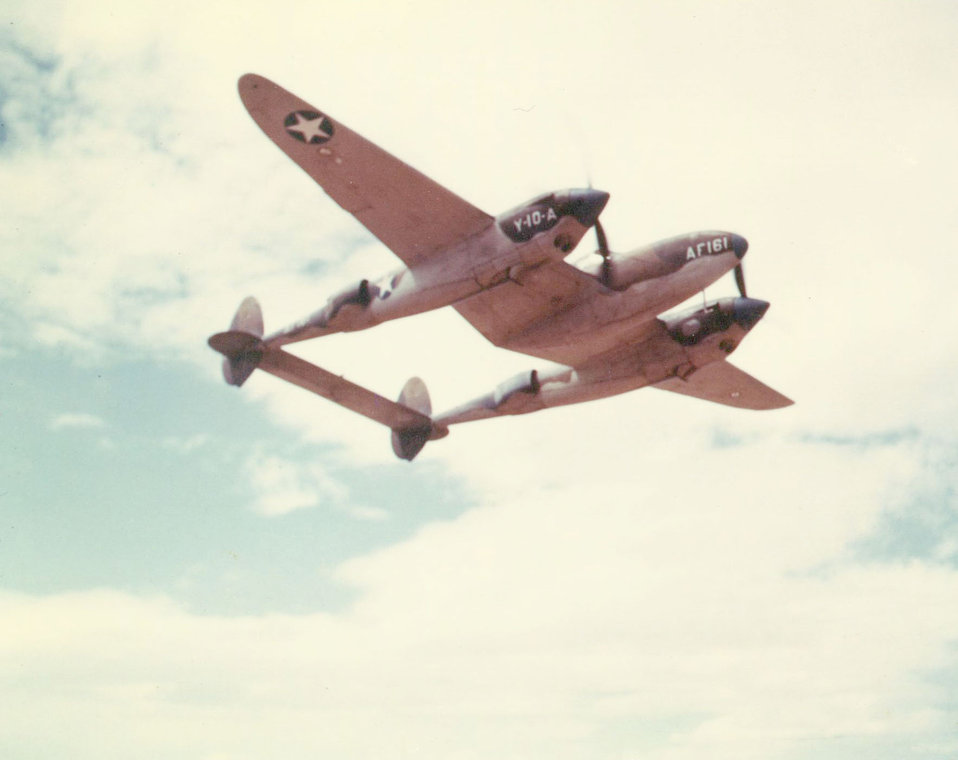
P-38

1940's -- P-38 Lightning in flight